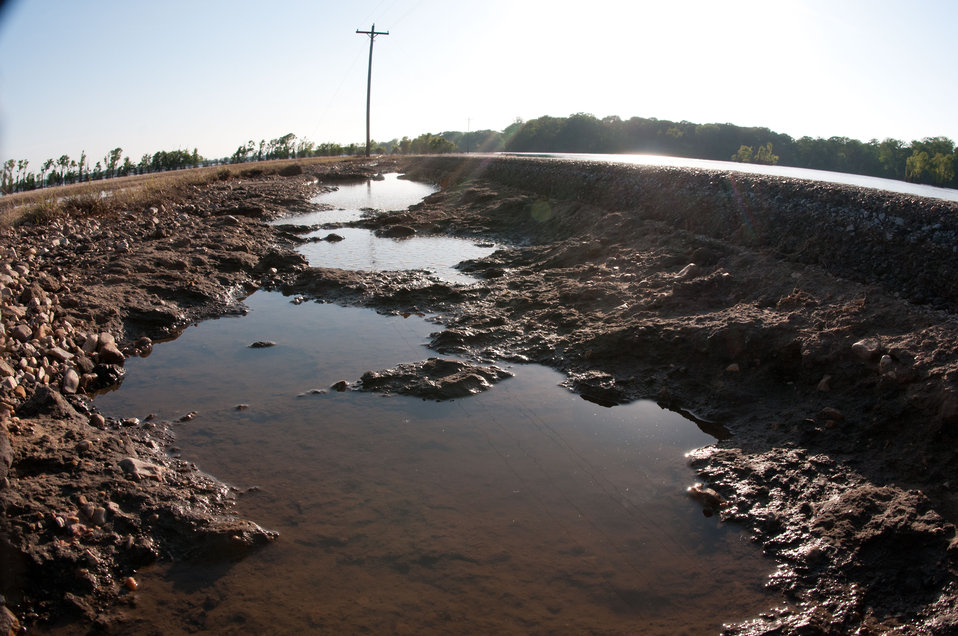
Receding Mississippi River floodwaters reveal the damaging effect on Lauderdale County, TN roadways (right) near Open Lake on Saturday, May 21, 2011. Although seemingly minor, the scouring effect of water flow over the asphalt washed away long stretches of the road base in this county. The damaged areas cannot be simply filled with dirt. The paved and unpaved roadways in flooded areas will require specialized road repairs that are paid for by local counties or municipalities.